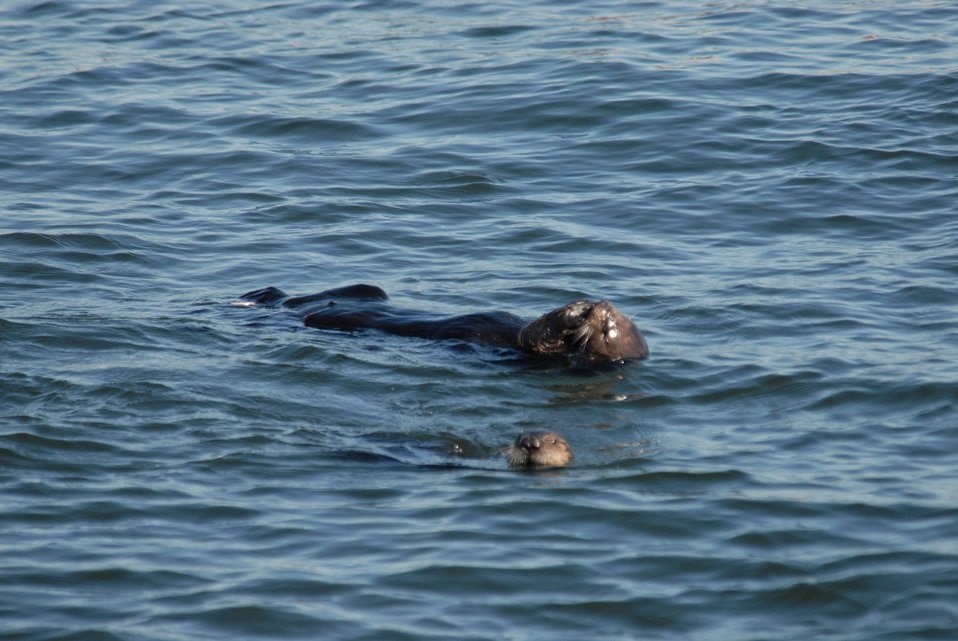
Sea otters